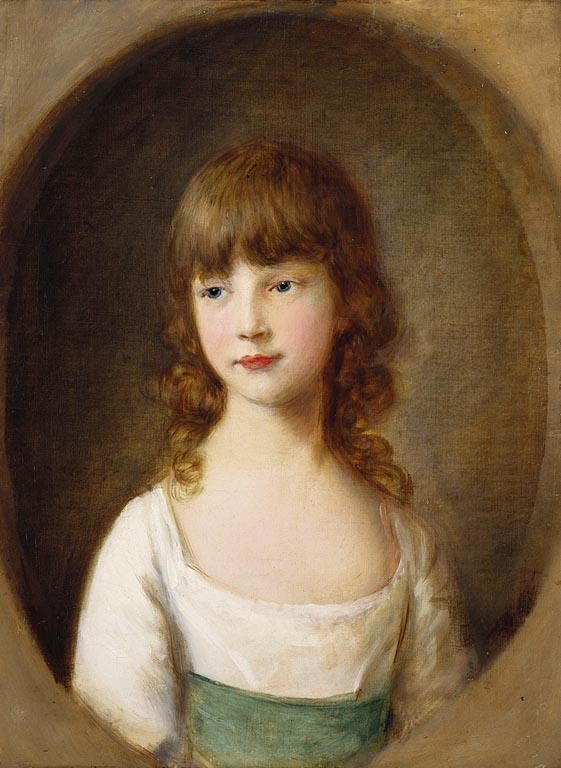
Gainsborough - Princess Mary, 1782